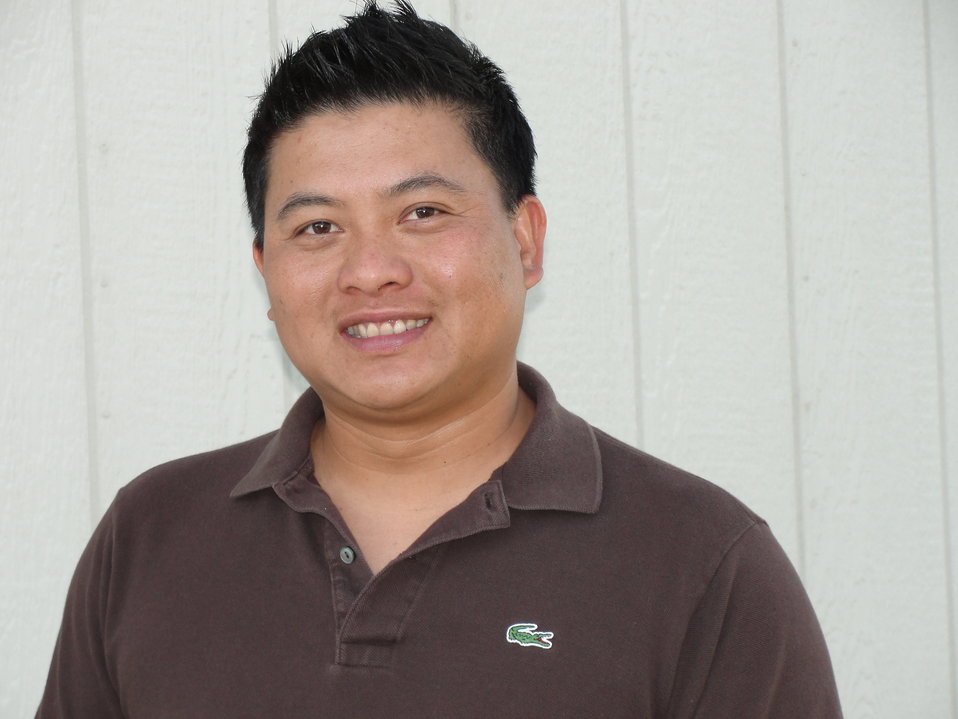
D.T. Luu, Nuclear Chemical Operator, CH2M HILL Plateau Remediation Company

D.T. is one of 230 NCOs that CH2M HILL has hired with Recovery Act funding. NCOs are trained in a range of areas including waste management, radiological controls, occupational safety, as well as forklift, crane and rigging operations. They play an important role across all of CH2M HILL’s Recovery Act project sites.